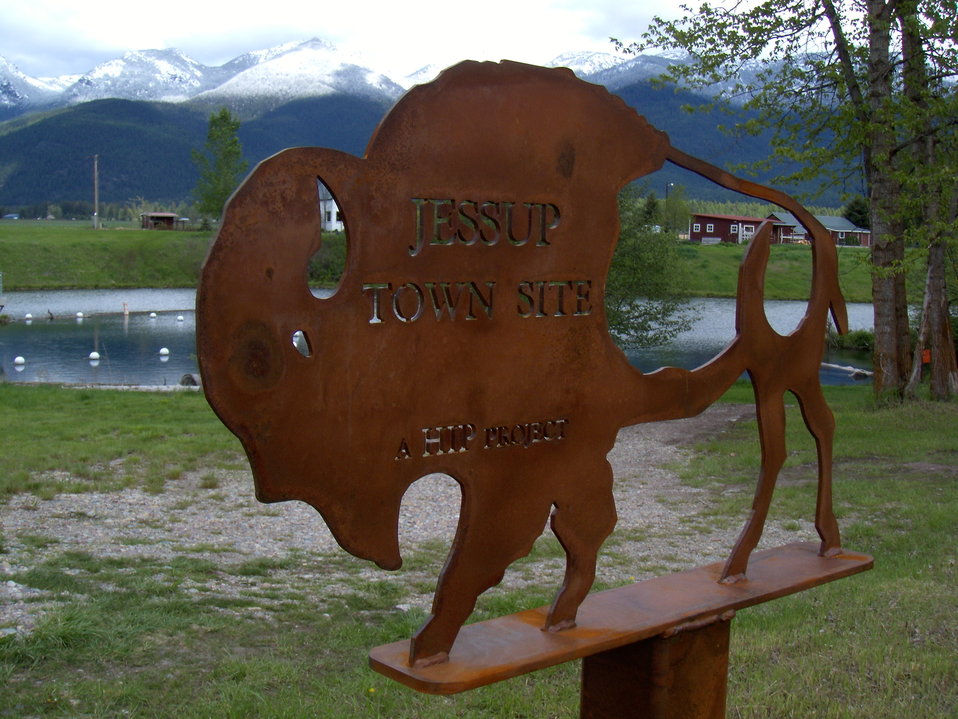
The Old Town of Jessup

Creston National Fish Hatchery is the site of what once was the Town of Jessup.

Location: Creston National Fish Hatchery

Credit: Evie Bradley / USFWS

Photo Contest Entry #88